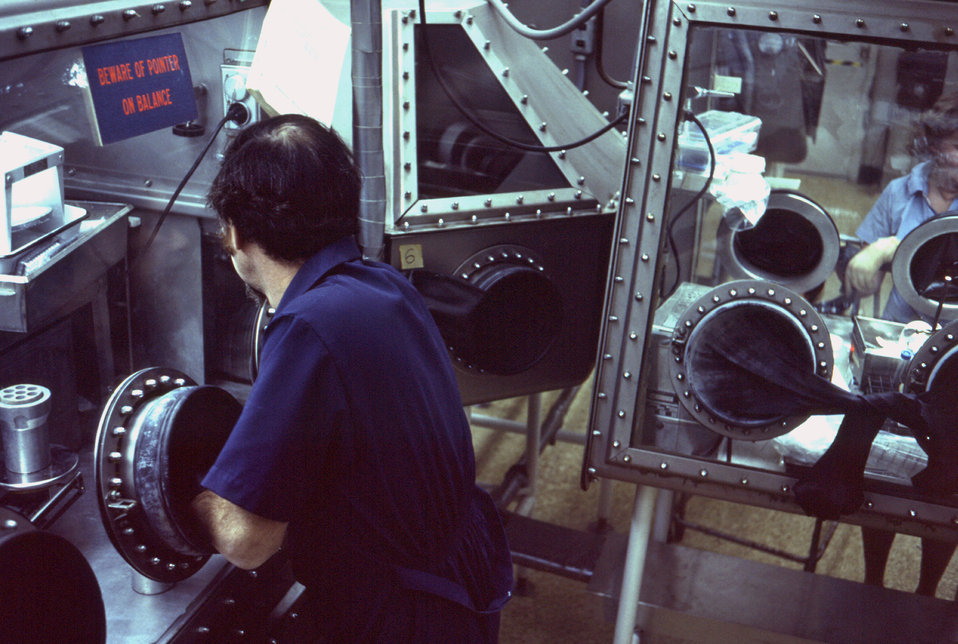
This 1975 photograph shows CDC laboratory technicians working outside of protective 'glove boxes', in order to determine if suspected vector specimens found in Rhodesia possessed traces of the Marburg virus.